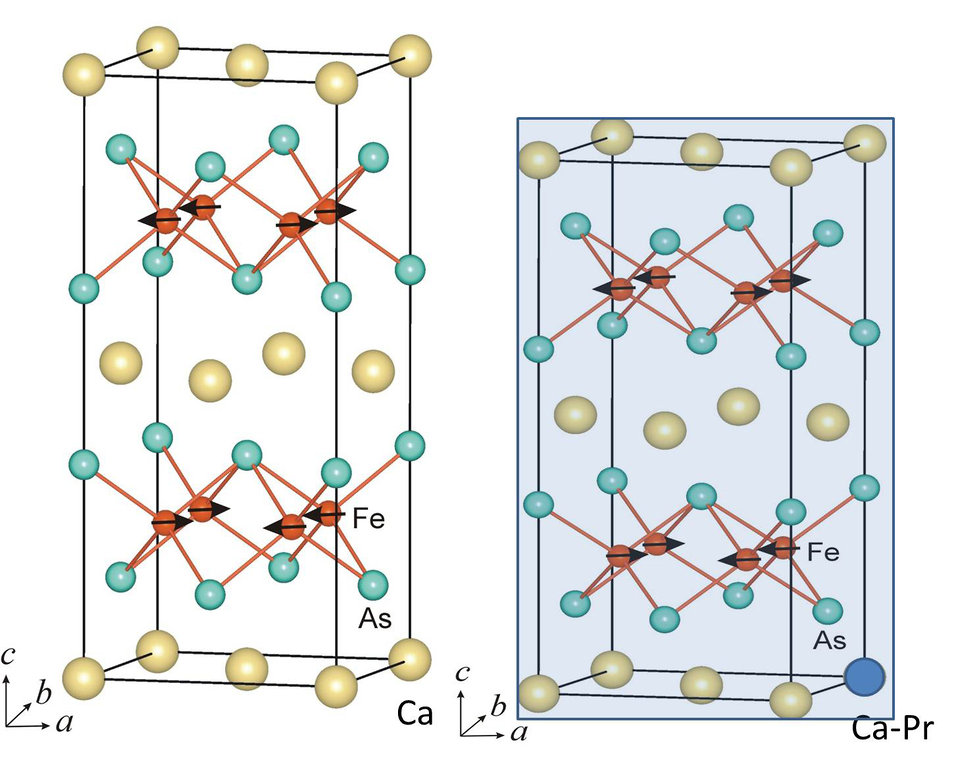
Iron

When calcium atoms (yellow spheres) in these iron-based crystals (left) are replaced on some occasions with praseodymium (blue sphere in right image), the crystals are able to superconduct at up to 47K - but the crystals can also collapse, shrinking by about 10 percent in size. Adding a sufficient amount of praseodymium is necessary to avoid the collapse, which compromises the materials usability in electronics applications.